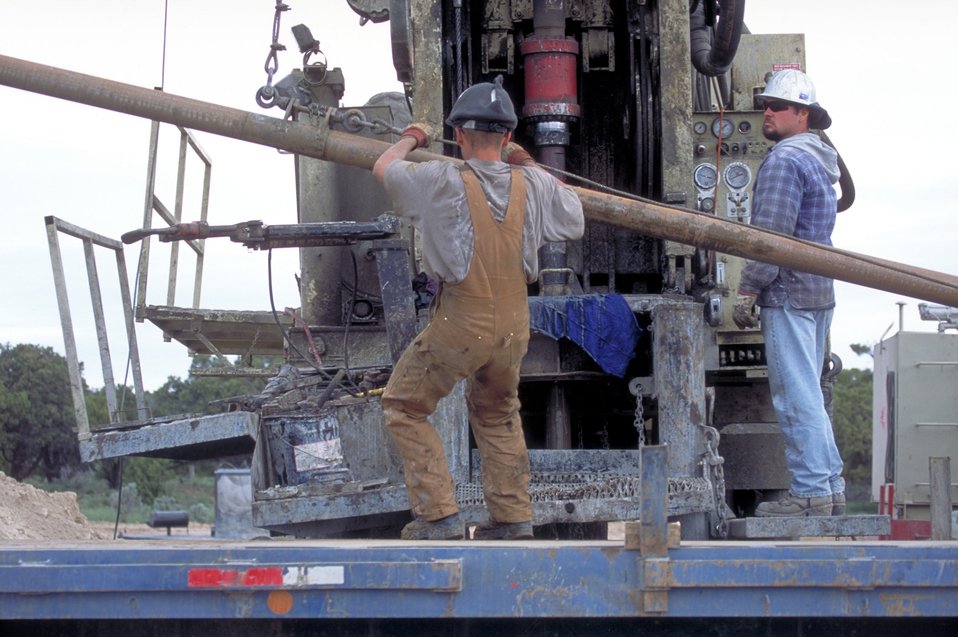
Drilling for coal bed methane near Price, Utah.